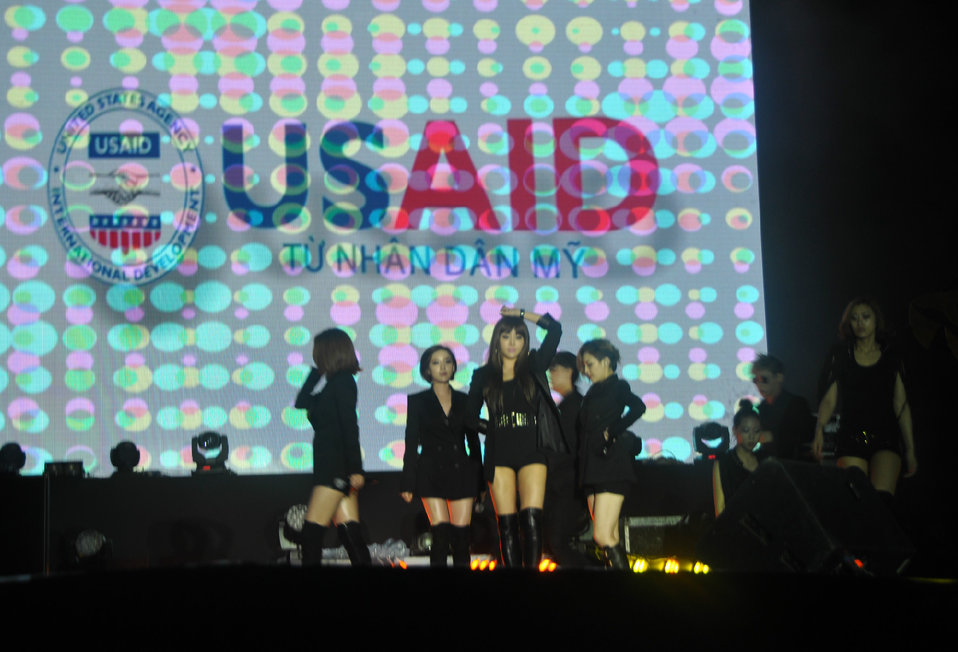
Korean Pop Group Brown Eyed Girls perform at MTV EXIT concert in Hanoi